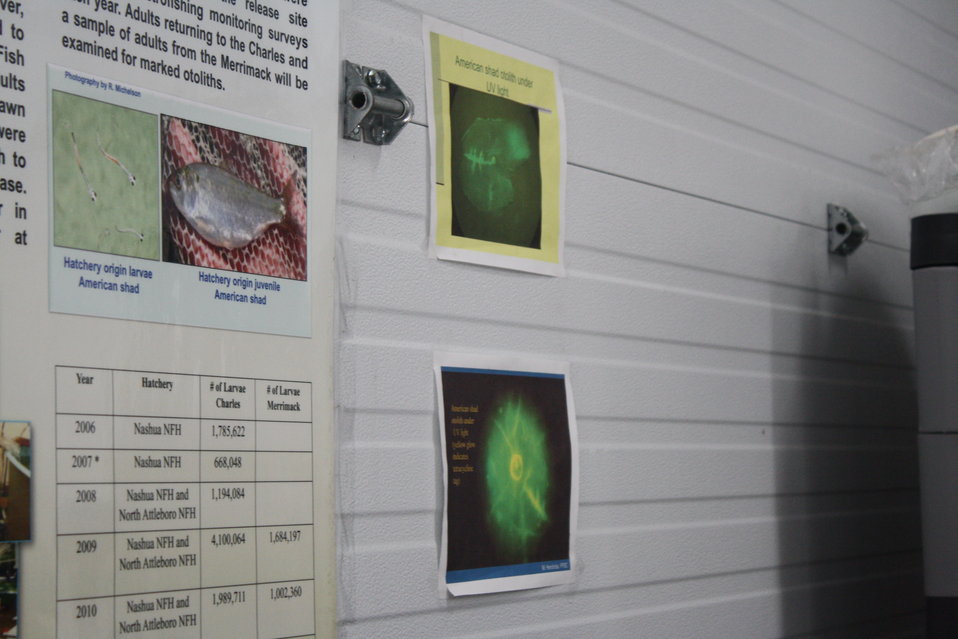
Nashua National Fish hatchery